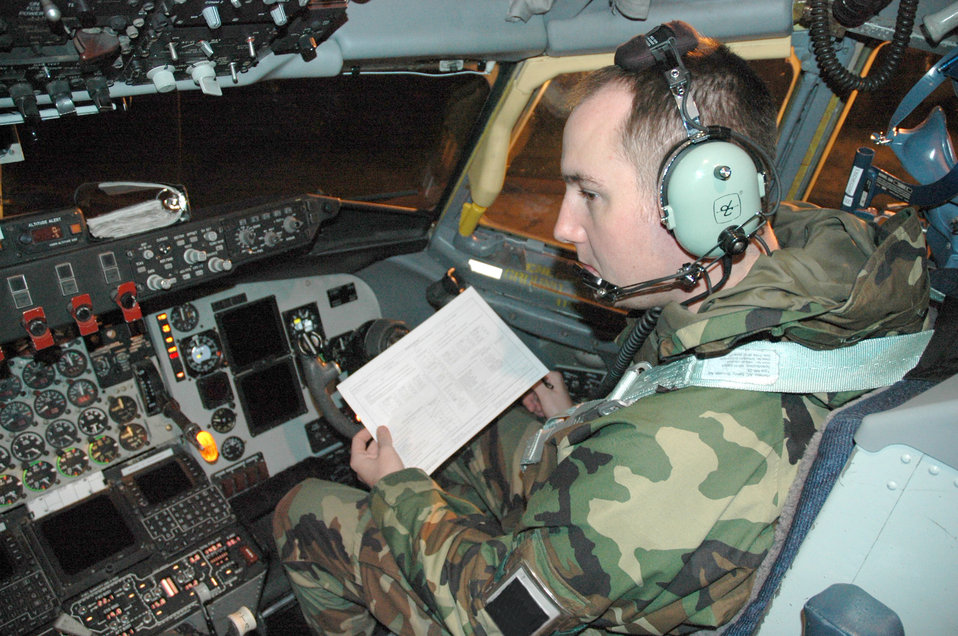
Fairchild, Grand Forks crews support NATO Summit

Senior Airman William Smith looks over a checklist to perform an engine run-up at Royal Air Force Mildenhall Dec. 4. KC-135 aircrews, crew chiefs and maintainers from Fairchild Air Force Base, Wash., and Grand Forks AFB, N.D., are deployed RAF Mildenhall to augment its refueling wing. Airman Smith is an avionics specialist assigned to the 92nd Air Refueling Wing.